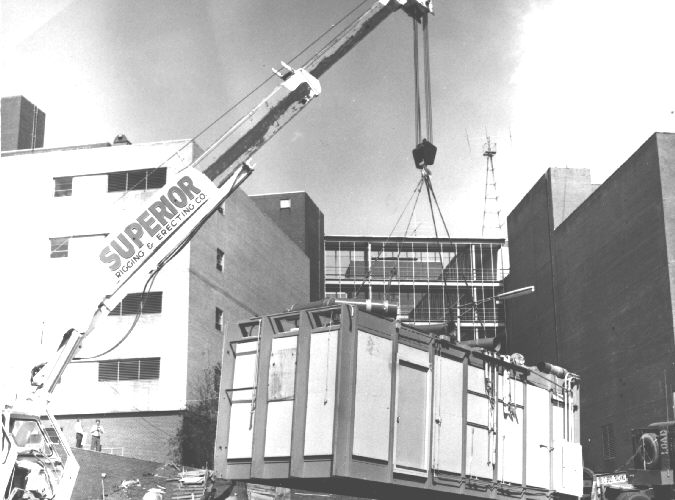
Construction of maximum containment lab at CDC.